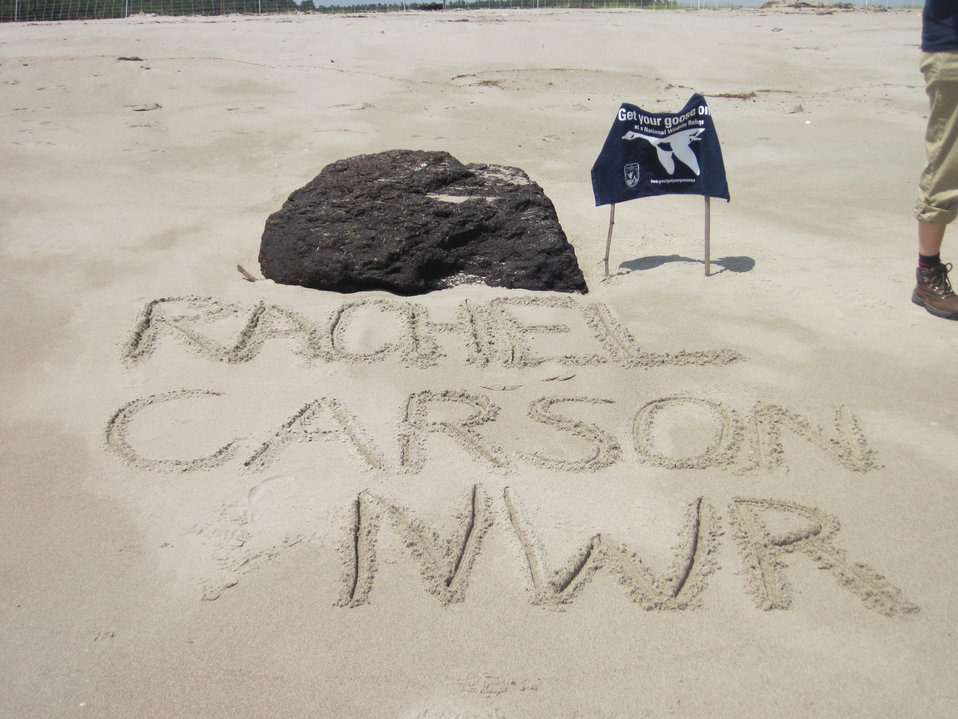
Get Your Goose On!

GYGO! at Rachel Carson National Wildlife Refuge.